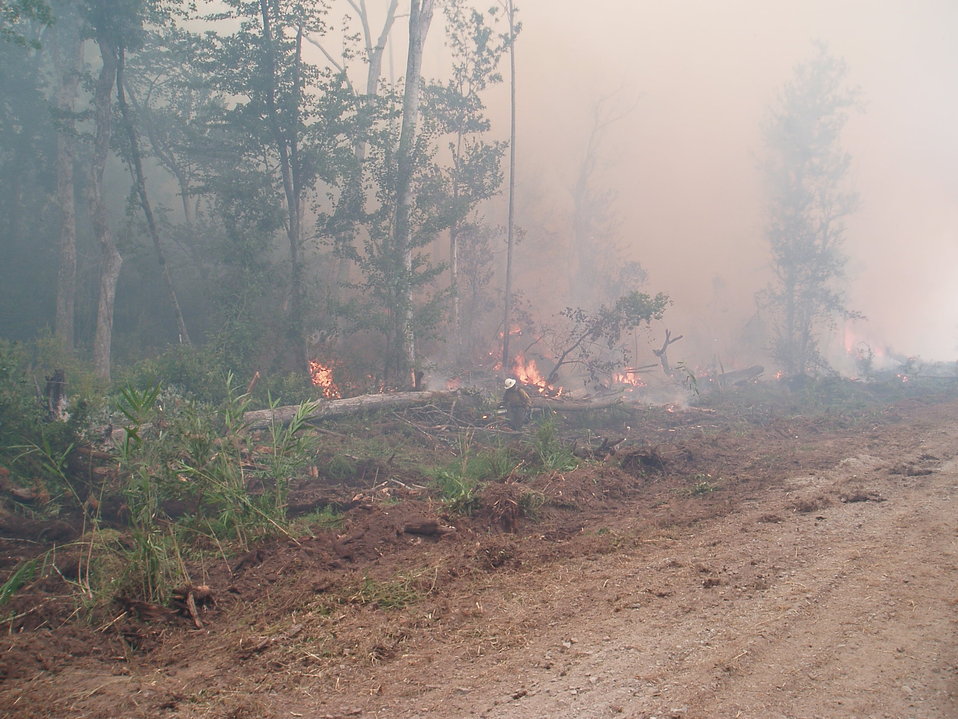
Working the line

Suffolk, VA, August 2011: A firefighter works to contain the Lateral West Fire on Great Dismal Swamp National Wildlife Refuge.